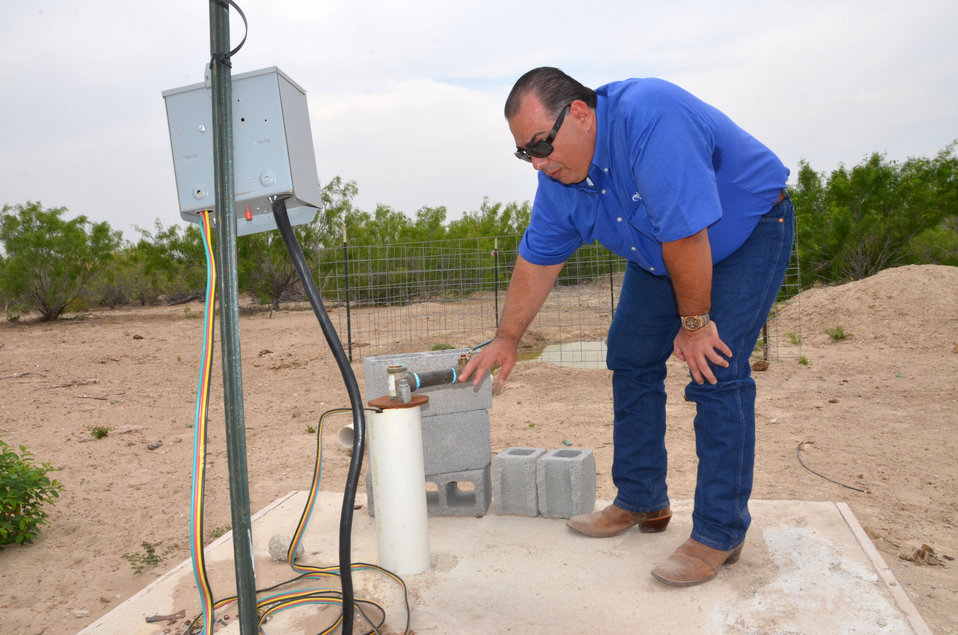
Espinoza1

Farmer Jorge Espinoza recently qualified for financial assistance to install a solar pump on an existing well through the U.S. Department of Agriculture’s (USDA) StrikeForce for Rural Growth and Opportunity in Laredo, TX.